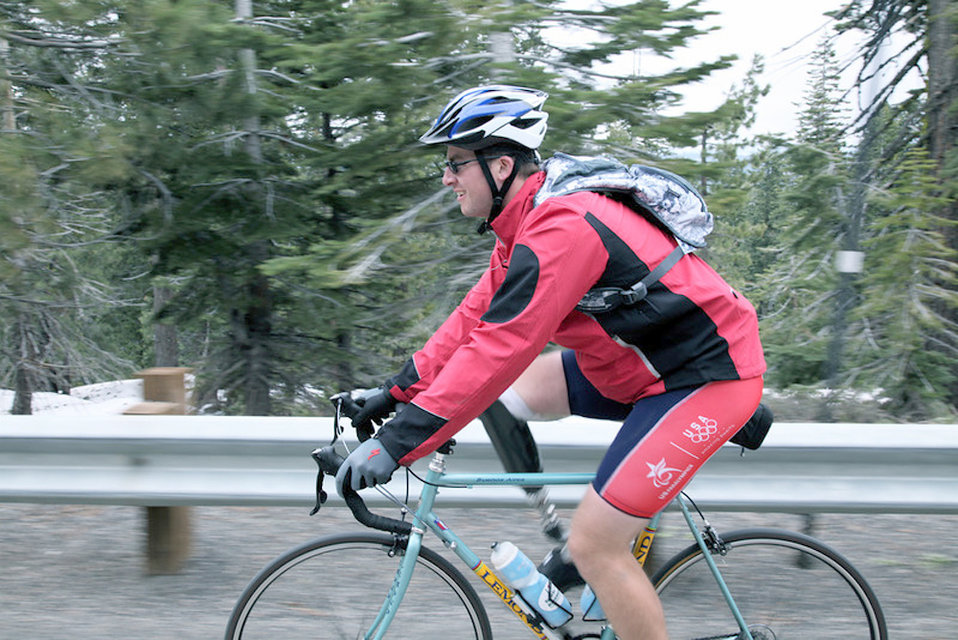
Cancer survivor takes on open road

Senior Airman Brian Petras is participating in the Sea to Shining Sea ride hosted by World T.E.A.M. Sports and sponsored by State Farm. The team of 20 riders is composed of primarily wounded, ill, or injured servicemembers cycling across the U.S. The ride started in San Francisco, Calif., and is scheduled to end July 24, 2010, at Virginia Beach, Va. Airman Petras is from the 50th Airlift Squadron at Little Rock Air Force Base, Ark.